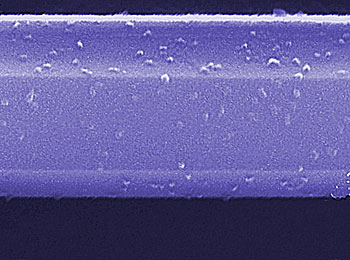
Nanowire; Sensor

Scanning electron microscope image of a gas sensor segment fabricated of a semiconducting nanowire of gallium nitride. The nanowire of less than 500 nanometers across is coated with nanoclusters of titanium dioxide, which alters the current in the nanowire in the presence of a volatile organic compound and ultraviolet light.